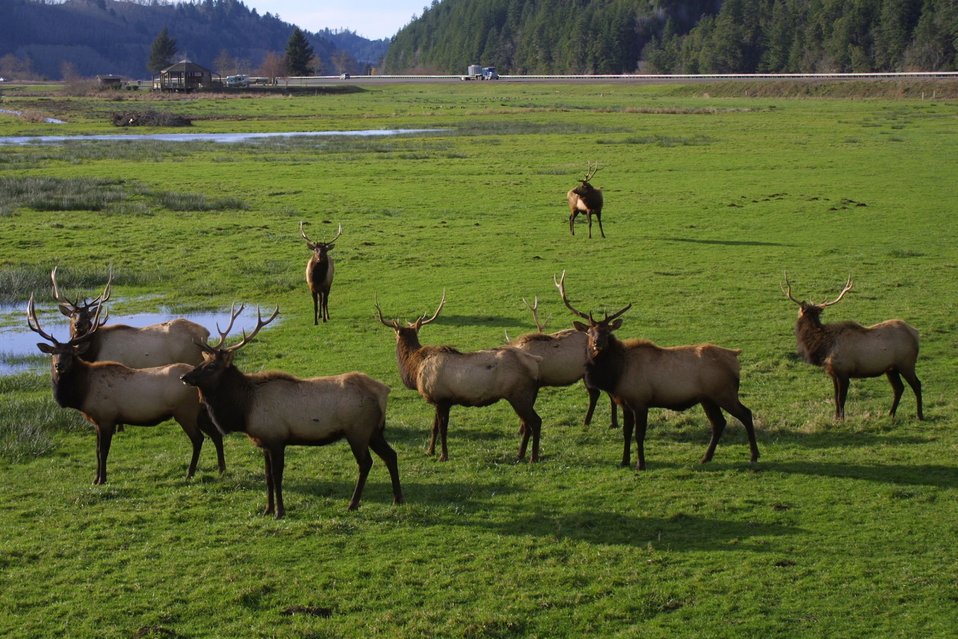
Elk at the Dean Creek Watchable Wildlife site near Reedsport, Oregon.